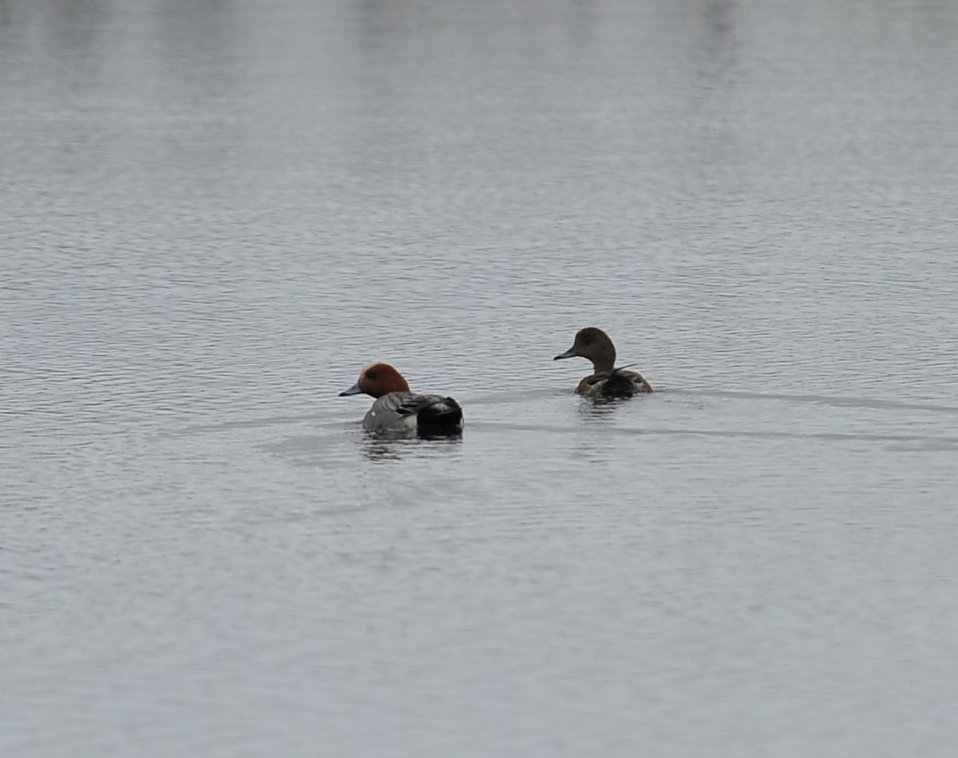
Eurasian Wigeon

USFWS Yukon Delta NWR